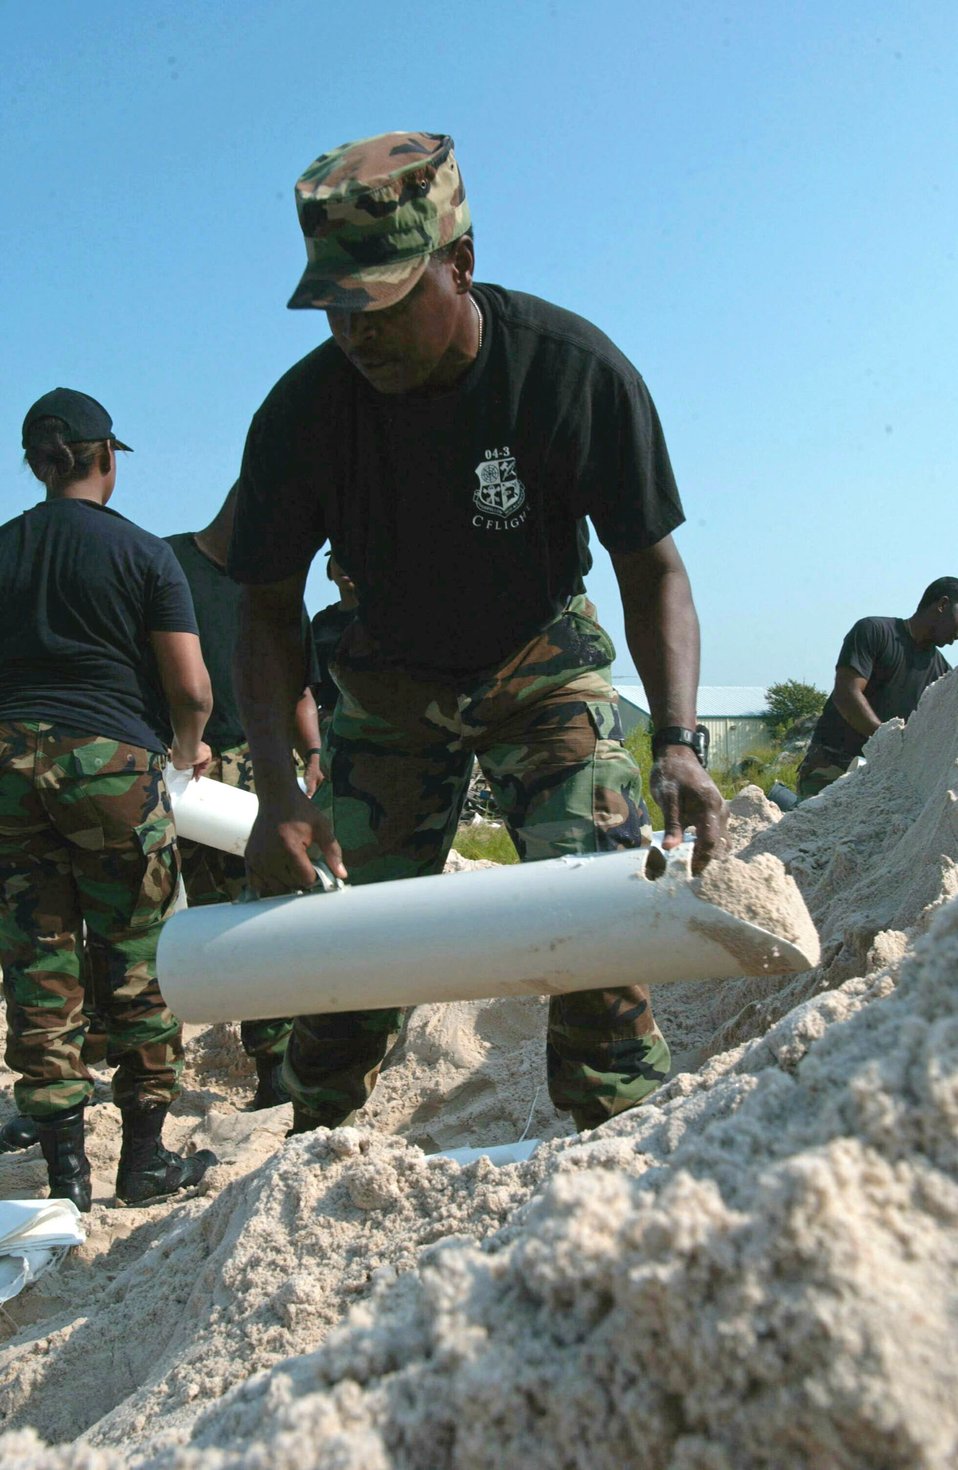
Preparing for the storm

ELLINGTON FIELD, Texas -- An Airman with the 147th Fighter Wing here scoops a tube of sand to fill sandbags Sept. 21 to protect buildings from flooding that Hurricane Rita is projected to bring. The hurricane is classified as a Category 4 and is expected to make landfall Sept. 24. Ellington Field is 17 miles southeast of Houston.